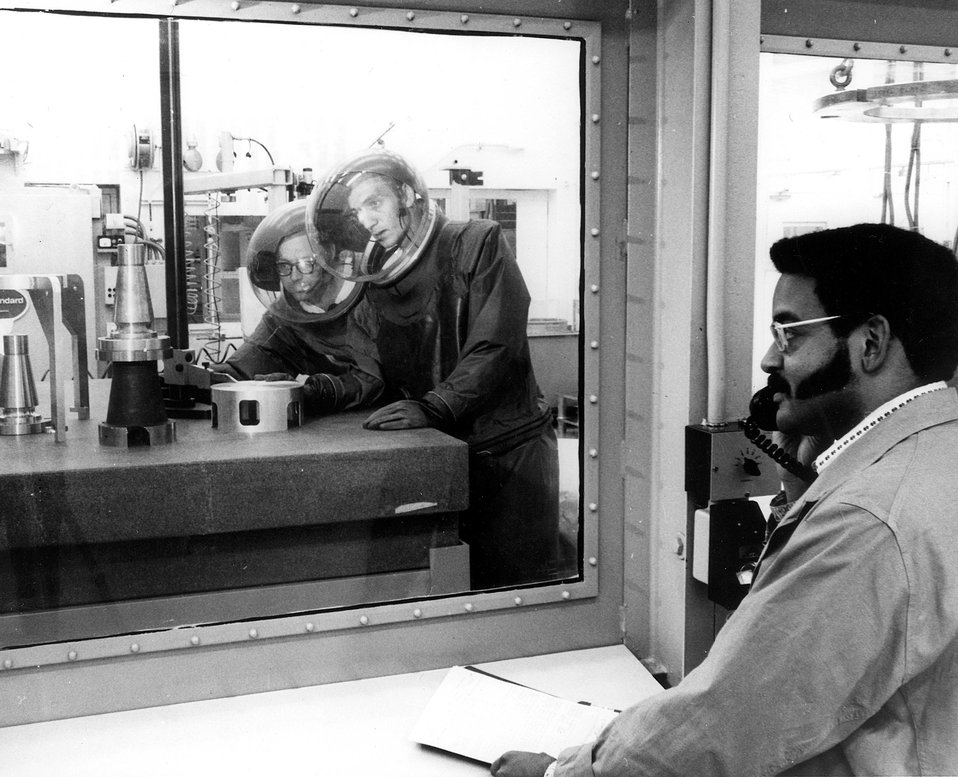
SUPPLIED AIR SUIT...An improved supplied-air suit, which protects a worker from uncomfortable or toxic environments and protects controlled atmospheric areas from human emissions, has been developed at the Oak Ridge Y-12 Plant in Tennessee. Circa 1972.